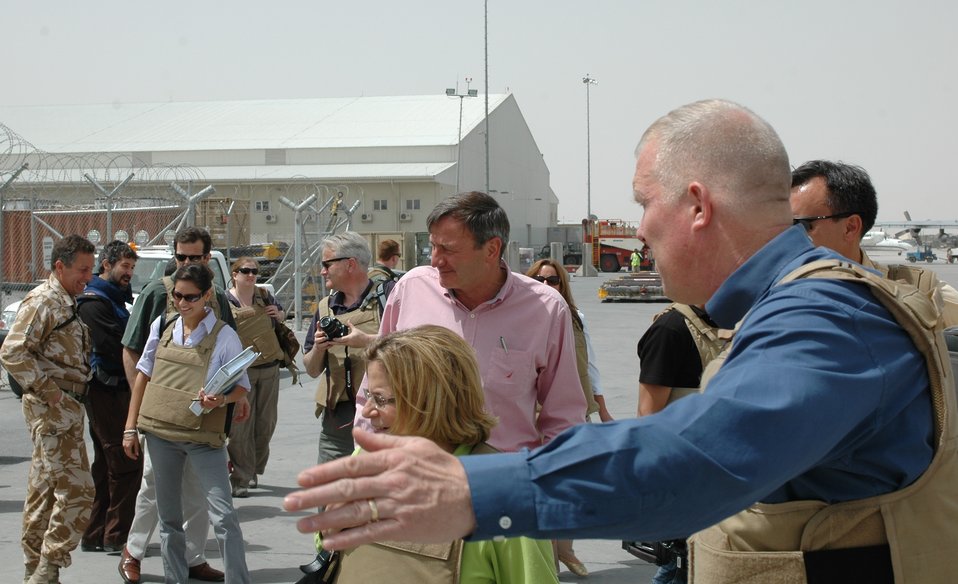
CODEL Berman